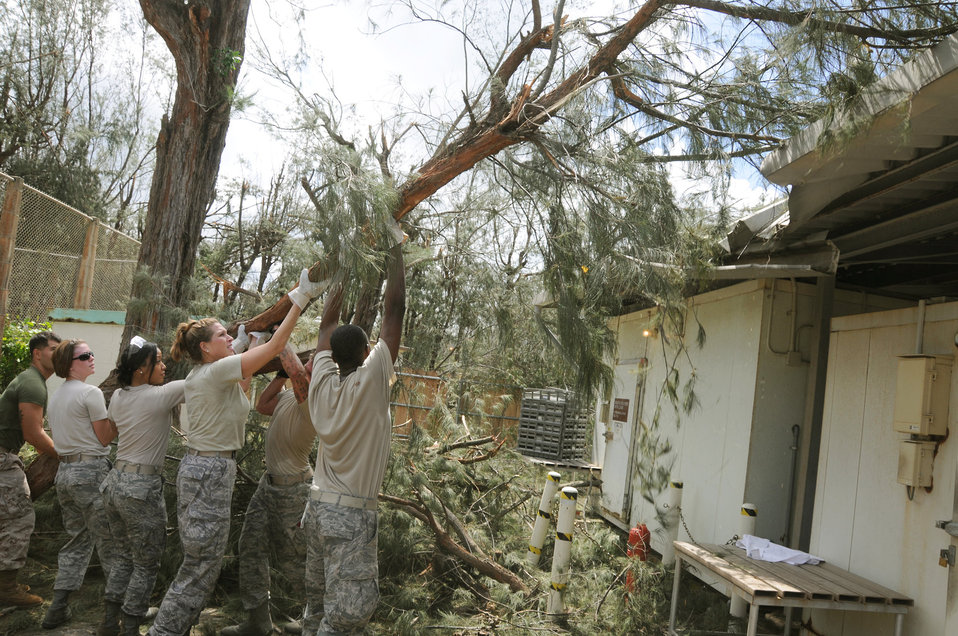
Airmen clean up after typhoon

Airmen from the 18th Wing at Kadena Air Base, Japan, team up to lift a fallen tree off the roof of a building at the Okuma Recreation Area Sep. 2, 2010. More than 100 Airmen volunteered to help clean up the debris left when Typhoon Kompasu struck Okinawa Aug. 31.